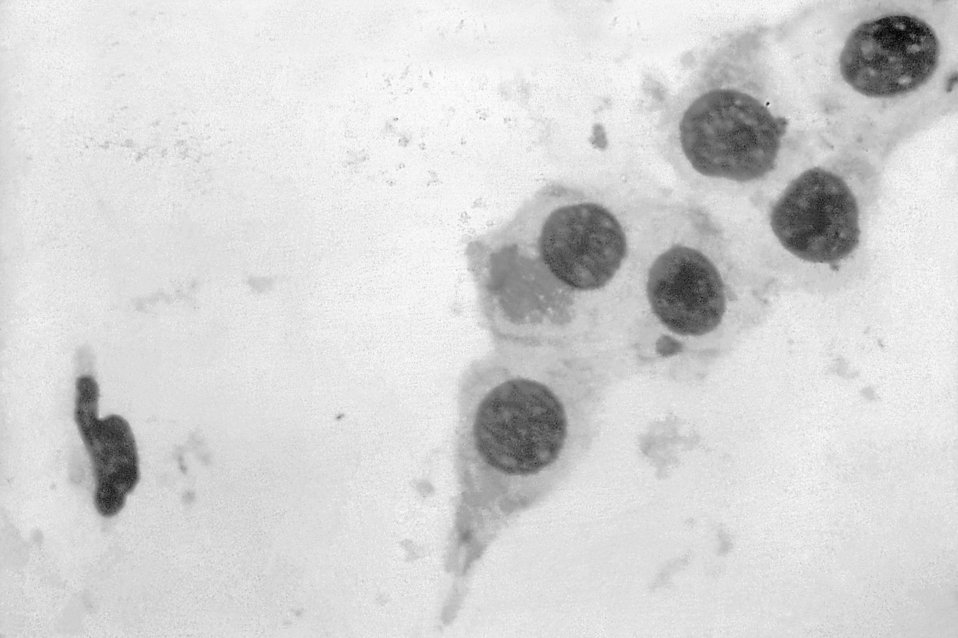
Photomicrograph of Chlamydia trachomatis taken from a urethral scrape.